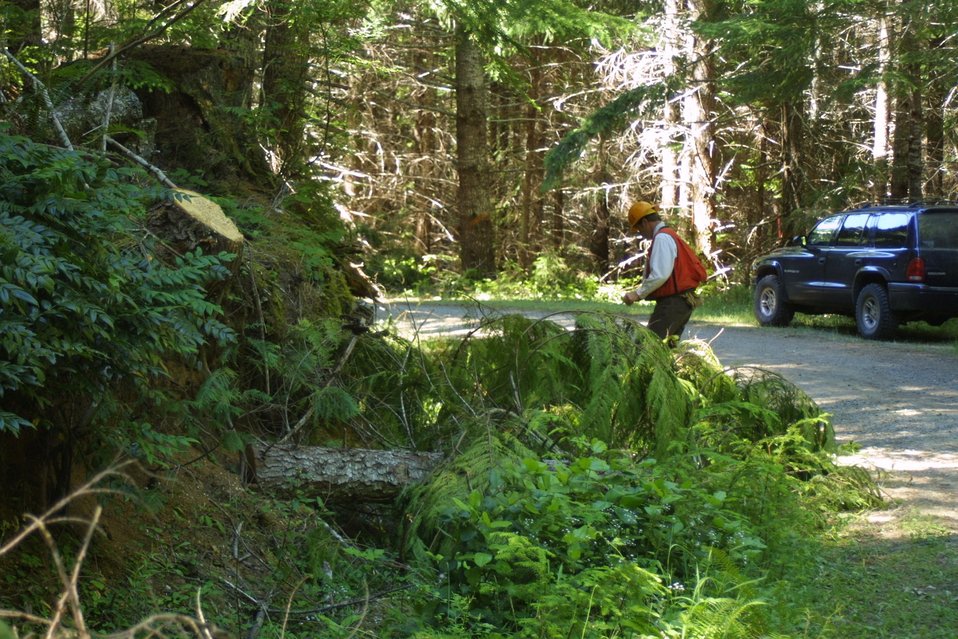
Camas East Timber Sale in Late Successional Reserve.